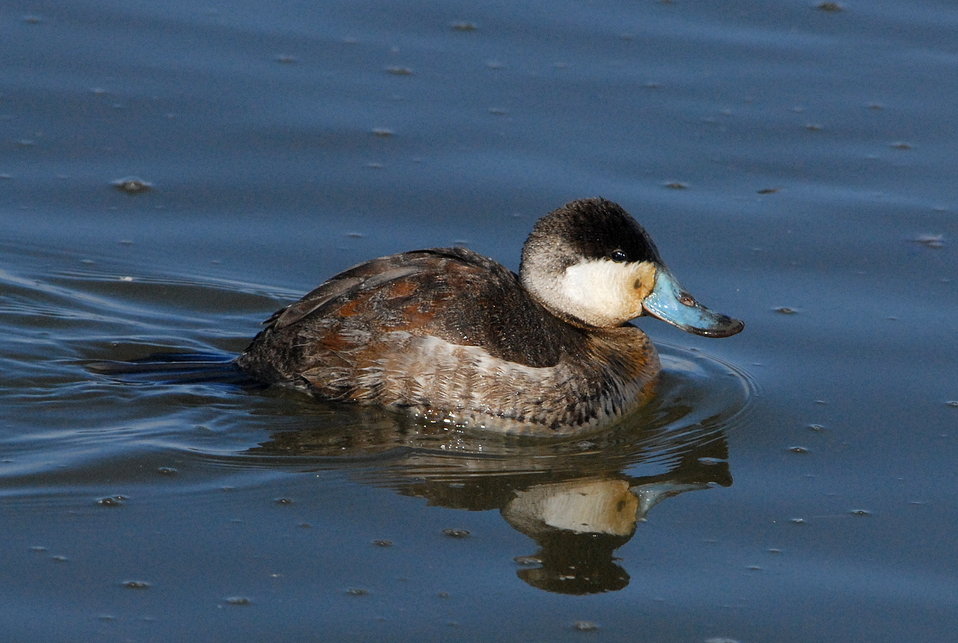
Ruddy Duck (winter Male)